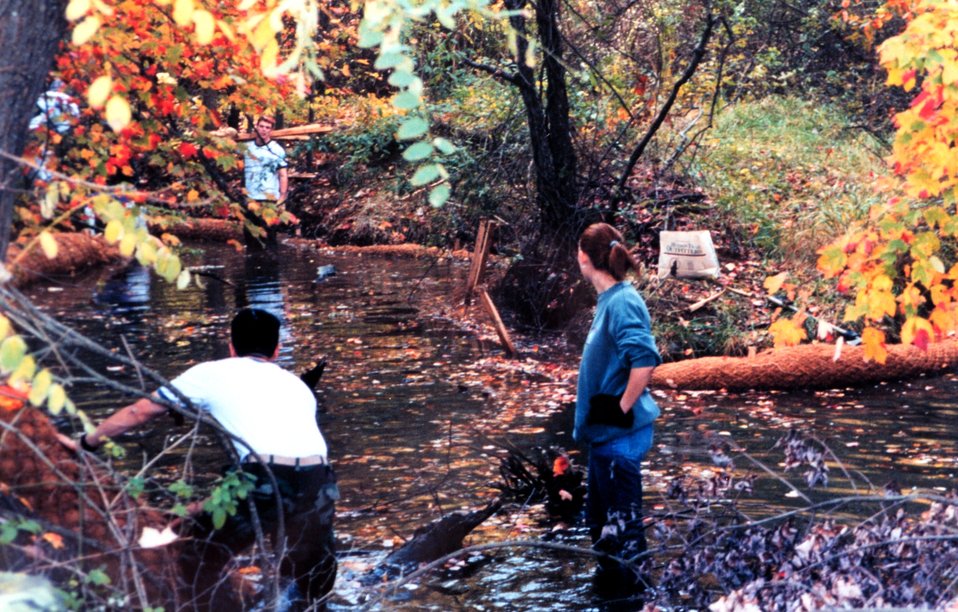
Installing Biologs to abate erosion problems along Spa Creek.